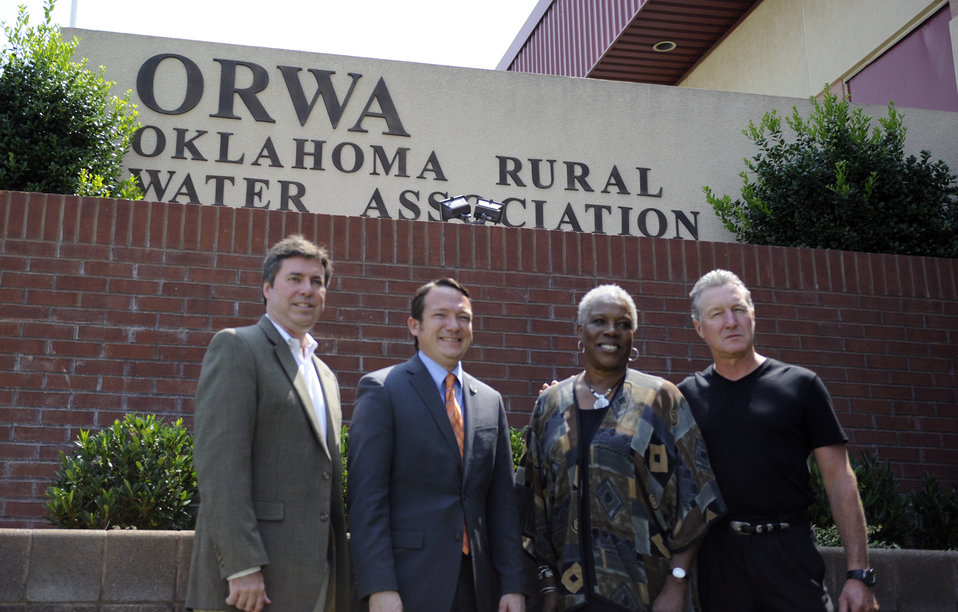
(L to R) Oklahoma Rural Water Association Executive Director (ORWA) James Gammill, U.S. Department of Agriculture (USDA) Rural Development (RD) Oklahoma State Director Ryan McMullen, USDA Food and Nutrition Service (FNS) Administrator Audrey Rowe, and Oklahoma Rural Water Association Regional Administrator Bill Ludwig stand in front of the ORWA building in Oklahoma City, OK on Thursday, Aug. 15, 2013.